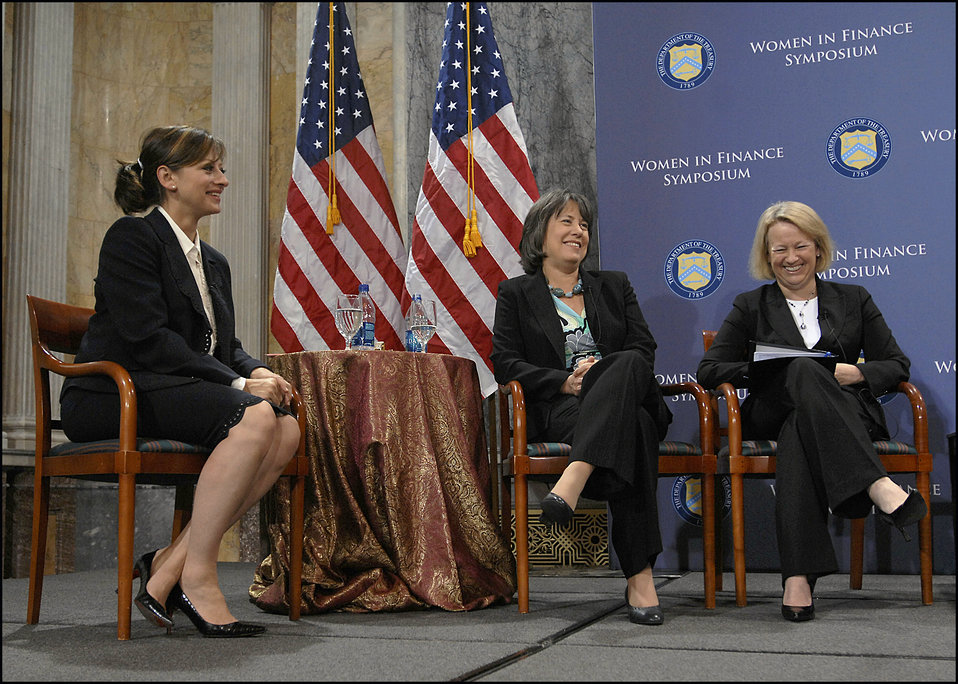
Women in Finance Symposium, 03/29/2010

Maria Bartiromo of CNBC, FDIC Chair Sheila Bair, and SEC Chair Mary Schapiro at the Women in Finance Symposium, March 29, 2010.